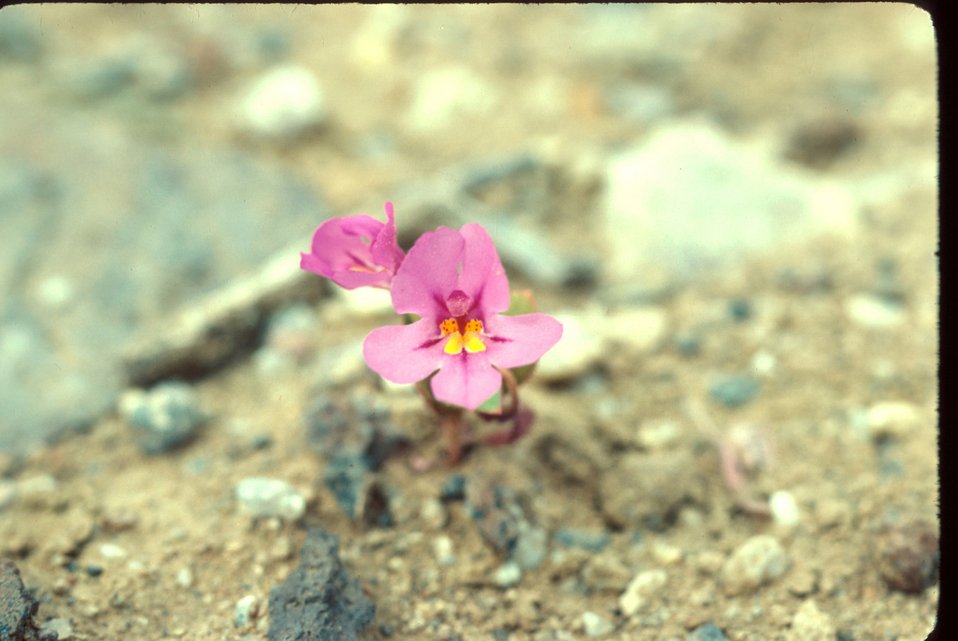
Near Murphy Idaho Dwarf-purple-monkey flower Mimulus nanus Wildflower